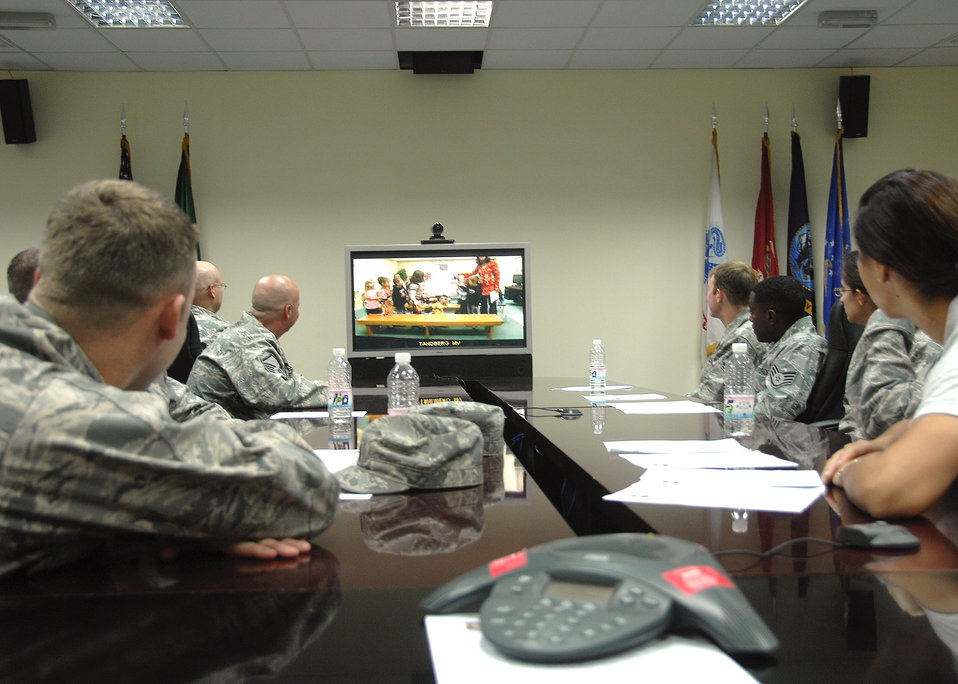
Sharing experiences with 'video pen pals'

Members of the 386th Expeditionary Logistics Readiness Squadron Aerial Port flight at an air base in Southwest Asia interact with third graders during a video teleconference session Nov. 12 with children from Mustang Valley Elementary school in Mustang, Okla. The children read poems they had written about Veterans Day, and asked questions of the Airmen about their experiences while being deployed in support of operations Iraqi Freedom and Enduring Freedom. The students and teachers at the school are planning to send care packages to the Airmen, thanking them for their service.